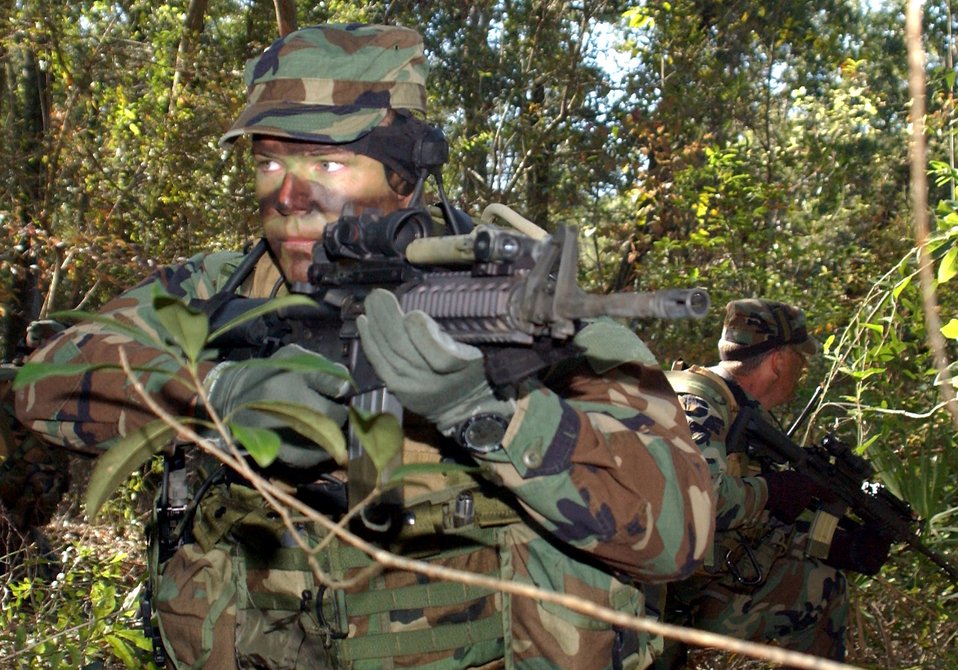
Front line forecast

HURLBURT FIELD, Fla. (AFPN) -- Capt. Don Garrett (left) and Staff Sgt. Jody Ball look for enemy forces during a special operations weather team exercise near the base. Special operations weathermen are highly trained to operate in hostile environments with special operators from all services. They provide weather data and forecasts that combatant commanders need to plan and execute missions. Captain Garrett and Sergeant Ball are with the 10th Combat Weather Squadron here.